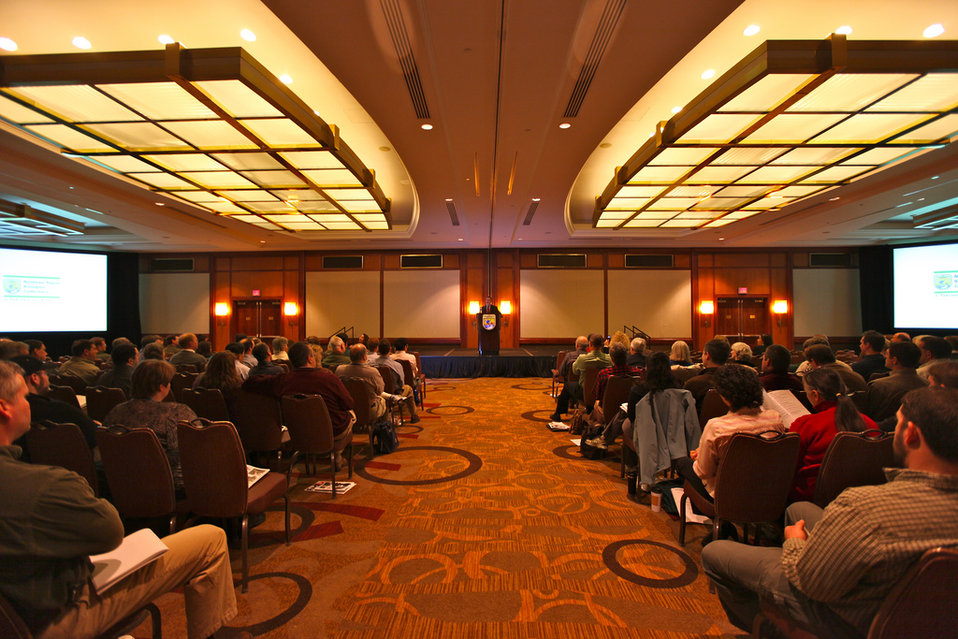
Northeast Region Biologists Conference